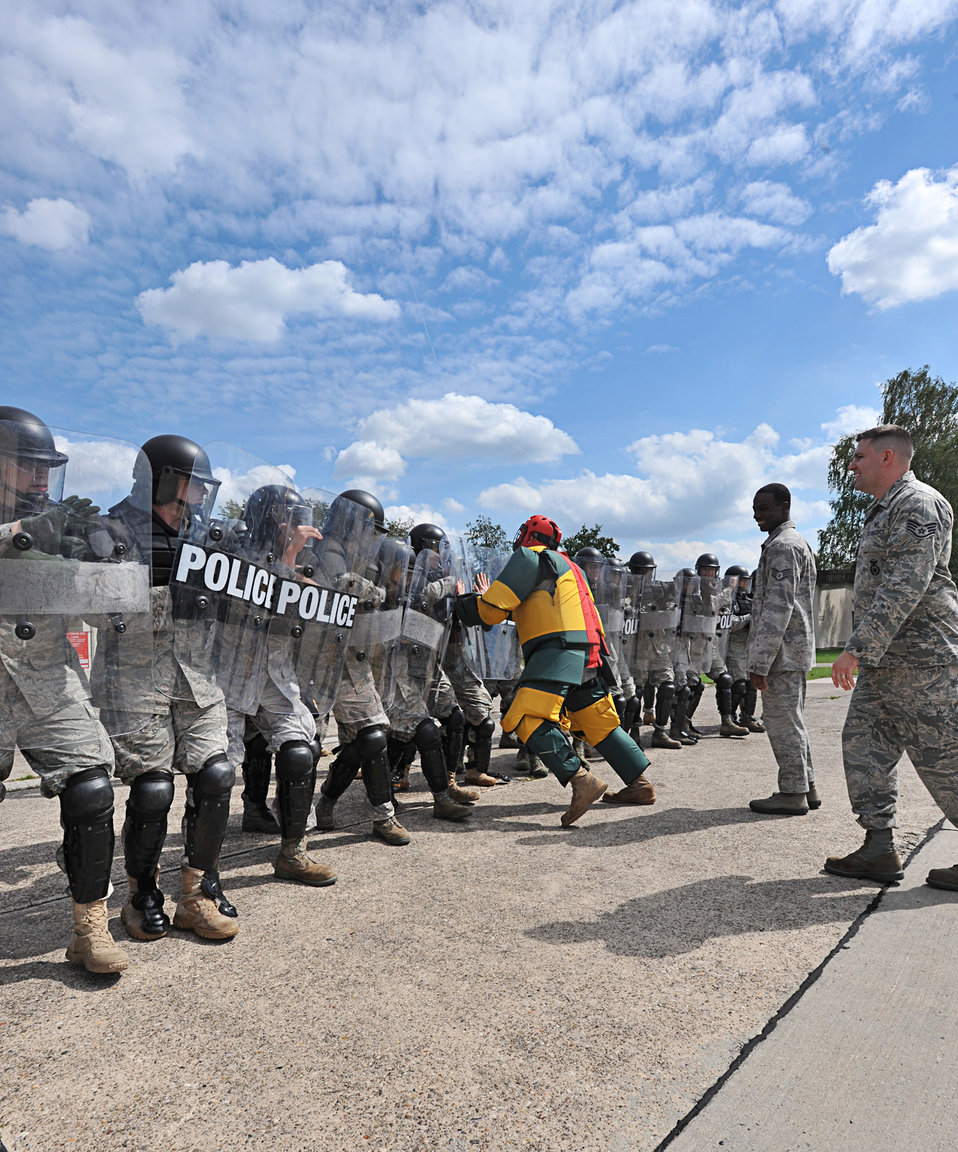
Crowd control

Members of the 86th Security Forces Squadron participate in a simulated protest exercise during a confrontation management class at Ramstein Air Base, Germany, Aug. 16, 2011. The 86th SFS trains for confrontation management to defend the base populace and its resources from violent protestors; it is also a core task of security forces members.